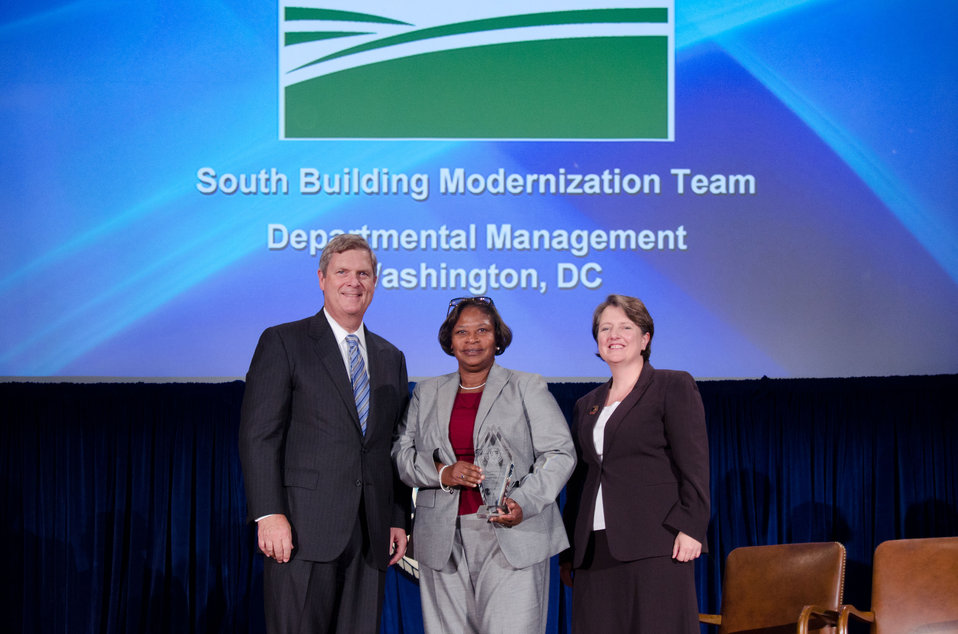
Agriculture Secretary Tom Vilsack (l) and Deputy Secretary Kathleen Merrigan (r), presents the Award to South Building Modernization Team, Departmental Management, Washington, DC. Valencia M. Winstead, Group Leader. For leading the completion of the renovation of the Wing 5 to provide a safer, healthier, accessible, energy efficient, and modern work environment for USDA employees. On Wednesday, September 14, 2011 in the Jefferson Auditorium at the US Department of Agriculture in Washington, DC.